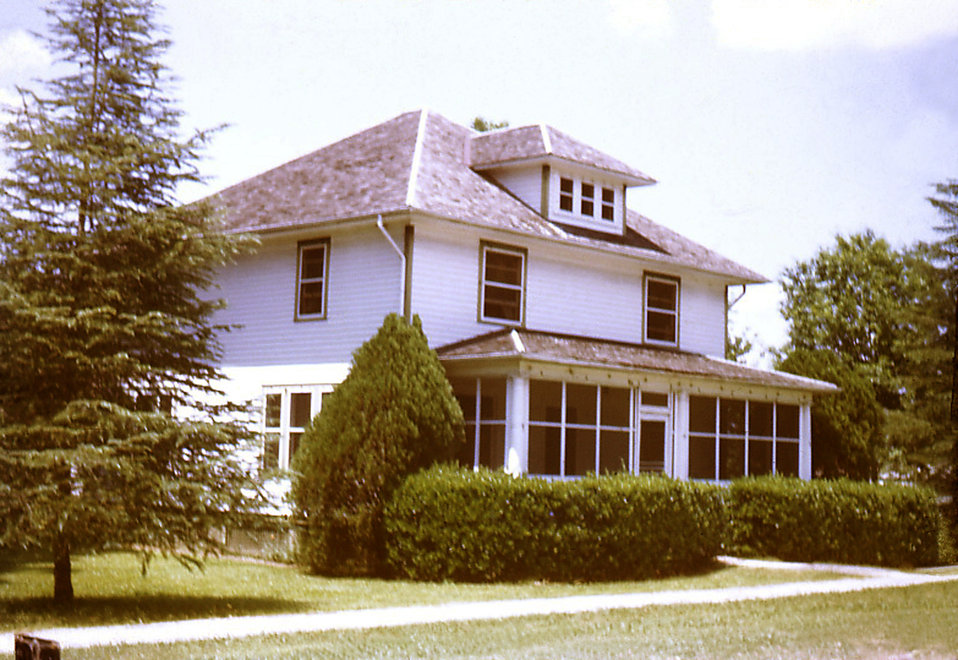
At the time of this historic photograph, this building acted as the home for the Carville, Louisiana Leprosarium's resident Minister."Patients of the U.S. Marine Hospital in Carville, Louisiana, produced a set of 35 mm slides around 1950 from which this image was derived. In 2002, a patient's son donated the set, the only one known in existence, to the museum. The father, a patient at Carville for several years, brought these slides home around 1950 to give his family a snapshot of life at the national leprosarium. The act of quarantining patients for leprosy (HD) remained law in the state of Louisiana until 1957."Today, the National Hansen's Disease Museum stands as a monument to those who battled Hansen's Disease (leprosy)--researchers and health care professionals, as well as those who suffered from the affliction.